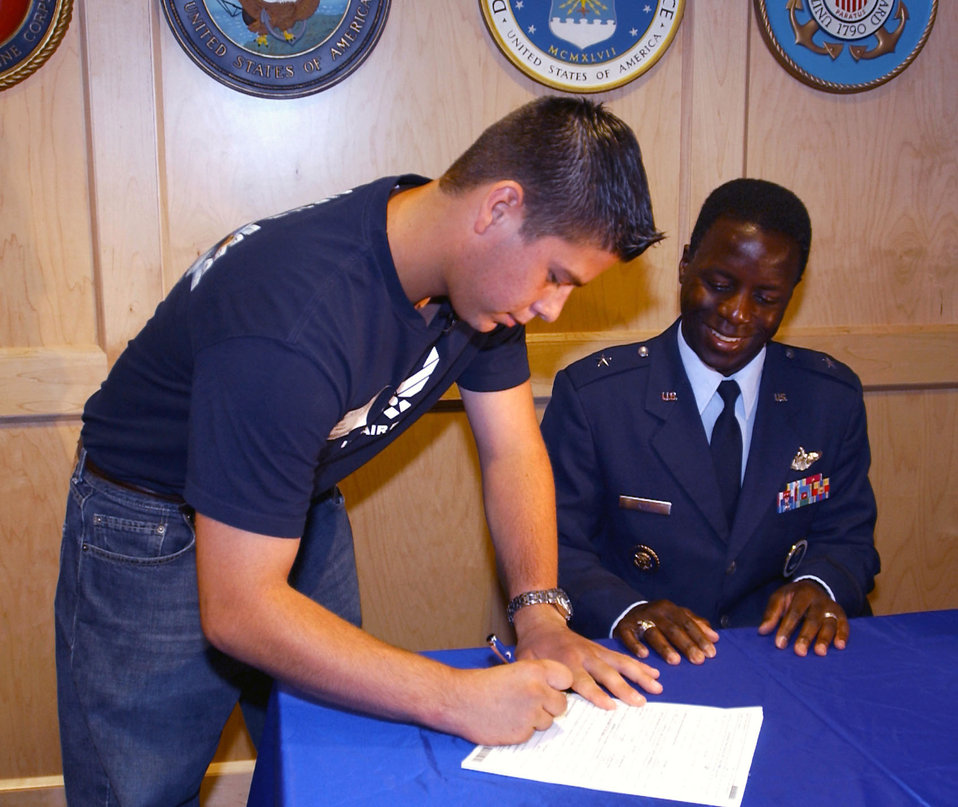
Baretto signs

SAN ANTONIO -- Hector Baretto signs his Air Force enlistment contract, witnessed by Brig. Gen. Edward A. Rice Jr., Air Force Recruiting Service commander. Baretto is the first Air Force 15-month enlistee under the National Call to Service program.